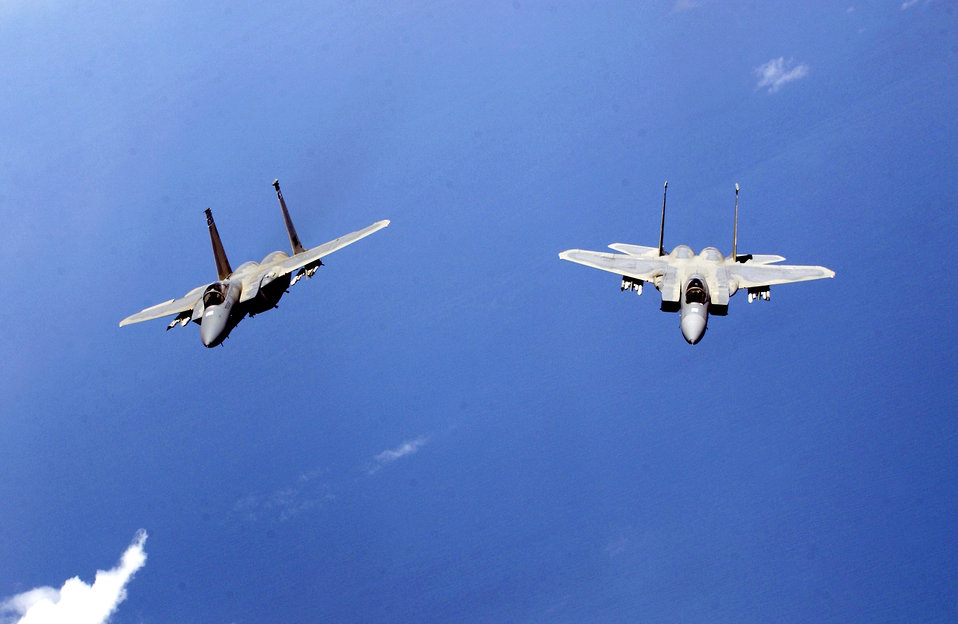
Refueling mission

F-15 Eagles from the Air National Guard's 125th Fighter Wing fly near Jacksonville International Airport, Fla., on July 20. The F-15s and KC-135 Stratotankers from the 434th Air Refueling Wing were training in mid-air refueling.